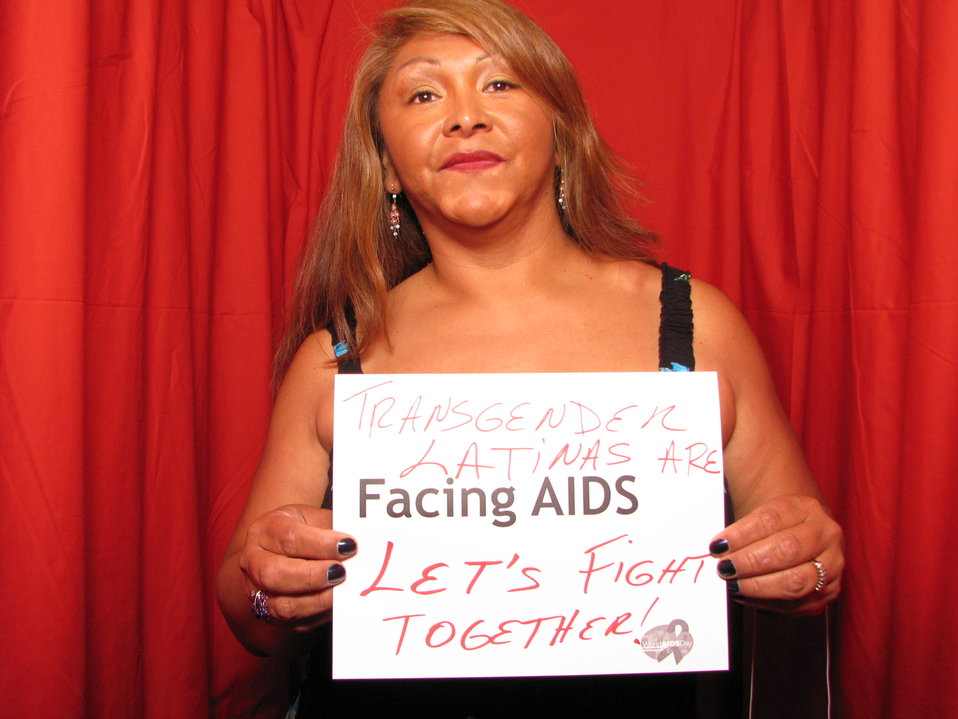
TRANSGENDER LATINAS ARE FACING AIDS LET'S FIGHT TOGETHER!

From the AIDS.gov photo booth at the U.S. Conference on AIDS, September 2010 (Orlando, FL).